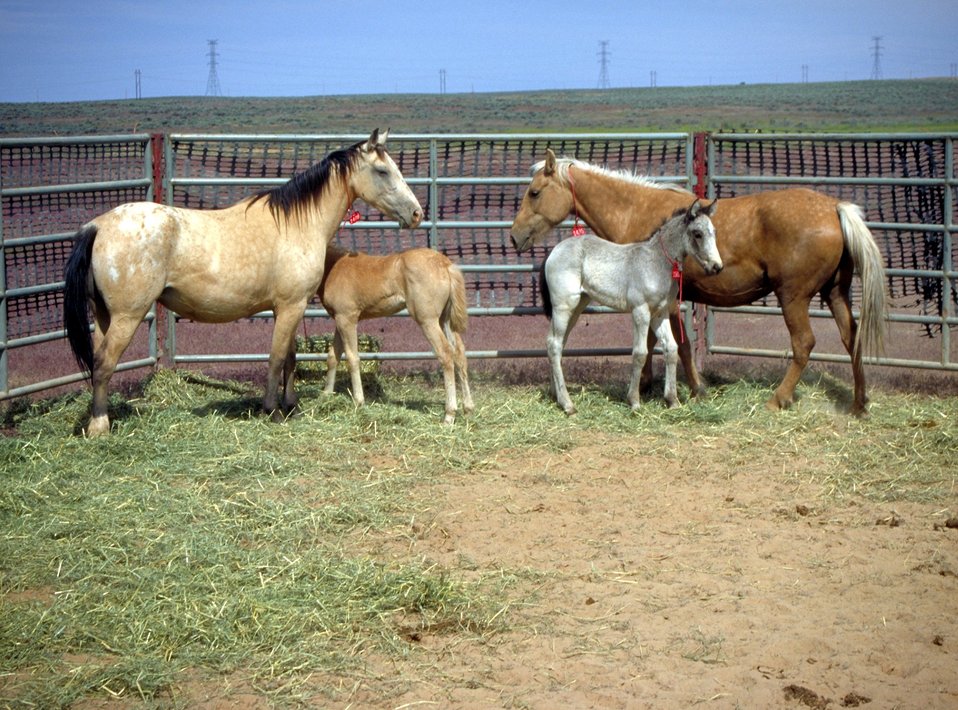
EIA testing near Vernal, Utah.